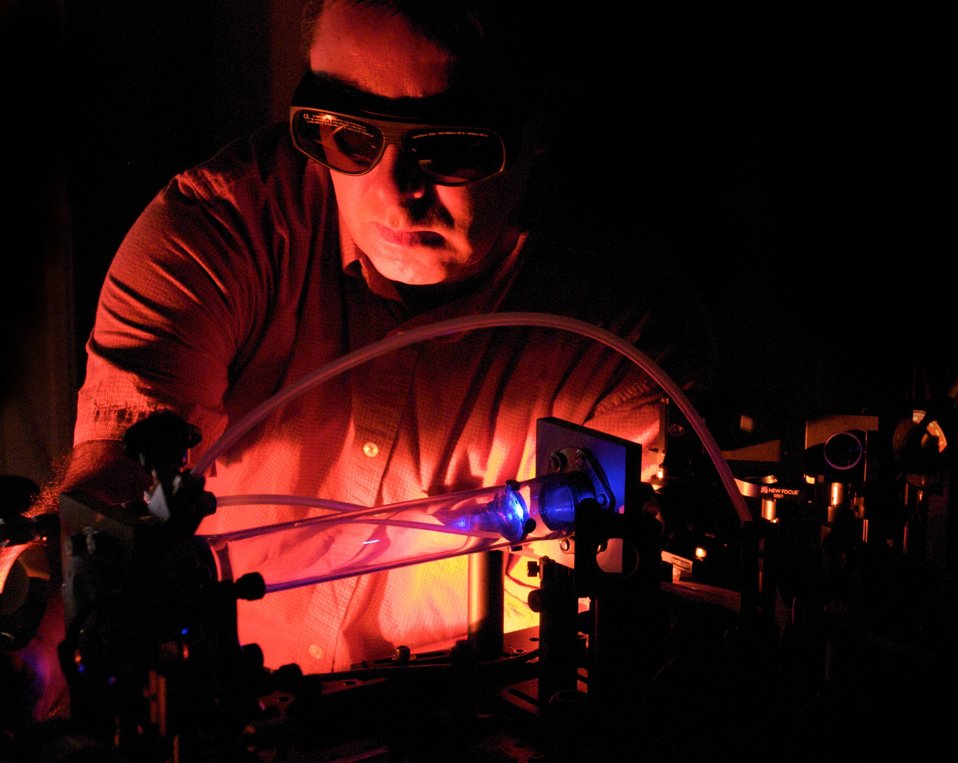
AT CINT, GEORGE RODRIQUEZ USES A TABLETOP LASER THAT PROMISES TO REVOLUTIONIZE HIGH-RESOLUTION MICROSCOPY AND SPECTROSCOPY IN THE LAB.

CINT is one of five NSRC's throughout the U.S. that form an integrated national program, affiliated with major facilities at the DOE's national laboratories, to cover the diverse aspects of nanoscience and technology. The complex aspires to become a cornerstone of the nation's nanotechnology revolution, contributing to DOE's principle missions in national defense and the environment while providing an invaluable resource for universities and industries. It's core facility in Albuquerque and gateway facilities at Los Alamos and Sandia National Laboratories. CINT provides open aces to tools and expertise needed to explore the continuum from scientific discovery to the integration of nanoscience into the Micro and Marco world.